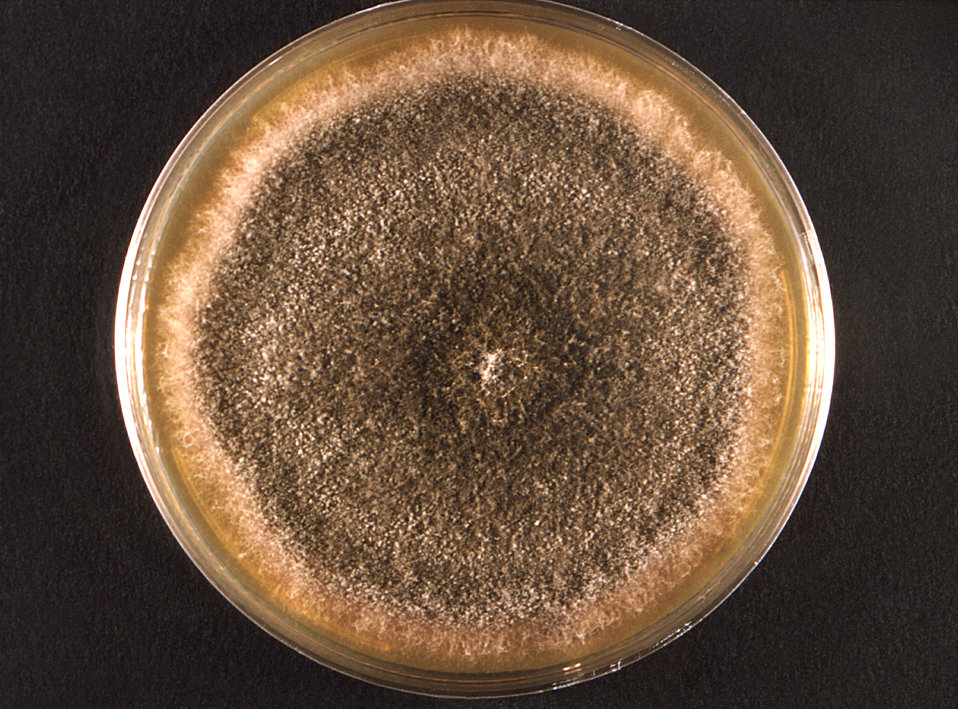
Photographed from the front, this 1971 image depicted a Petri dish within which a Bipolaris hawaiiensis fungal colony had been cultured. On its front surface, as depicted here, you'll note that the colonial texture appears 'woolly'. Normally, the reverse coloration appears as black, but is sometimes observed as brown with areas becoming black.